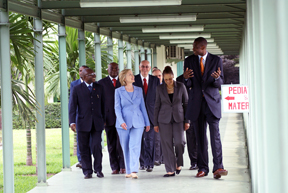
Secretary Clinton Visits Mutombo Hospital

U.S. Secretary of State Hillary Rodham Clinton visits the Biamba Marie Mutombo Hospital in Kinshasa, Democratic Republic of Congo August 10, 2009.